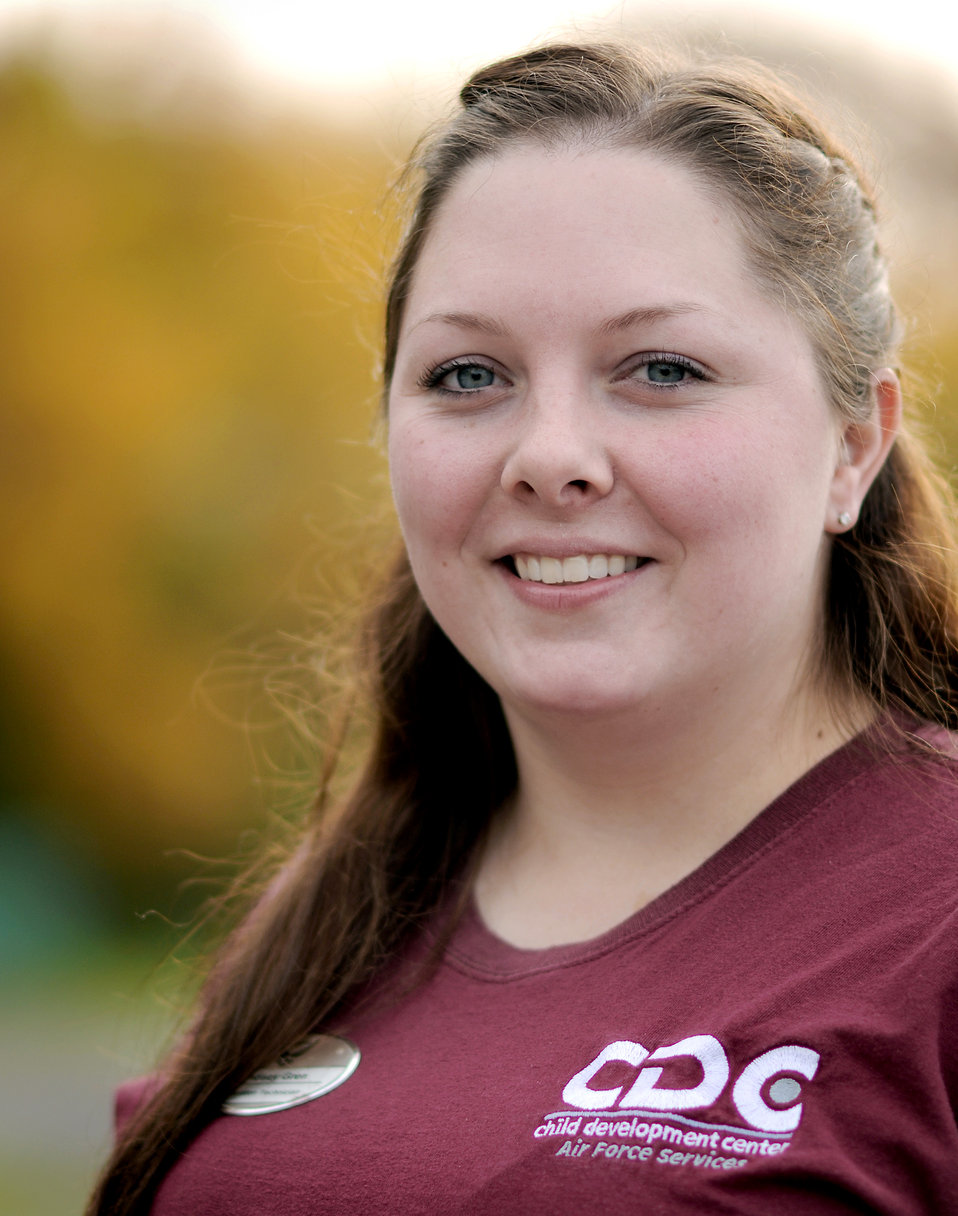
CDC professional saves infant's life

Lindsey Gren used rescue breaths to help save the life of a 3-week-old baby at the commissary at Spangdahlem Air Base, Germany. Ms. Gren is a child development center education technician at Spangdahlem AB.